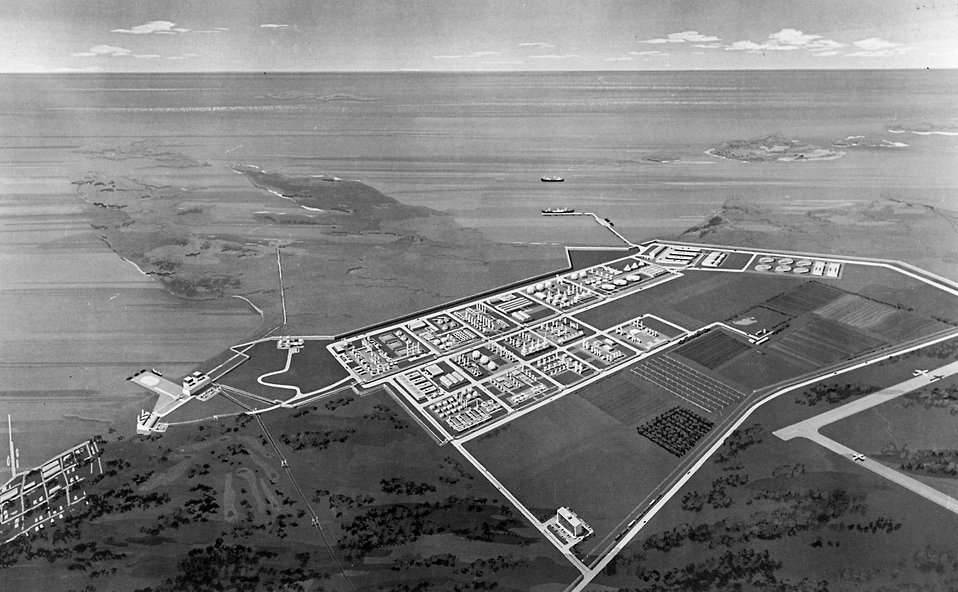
A nuclear-powered industrial complex, which is still in the conceptual stage, for the South Coast of Puerto Rico. Circa 1971

.